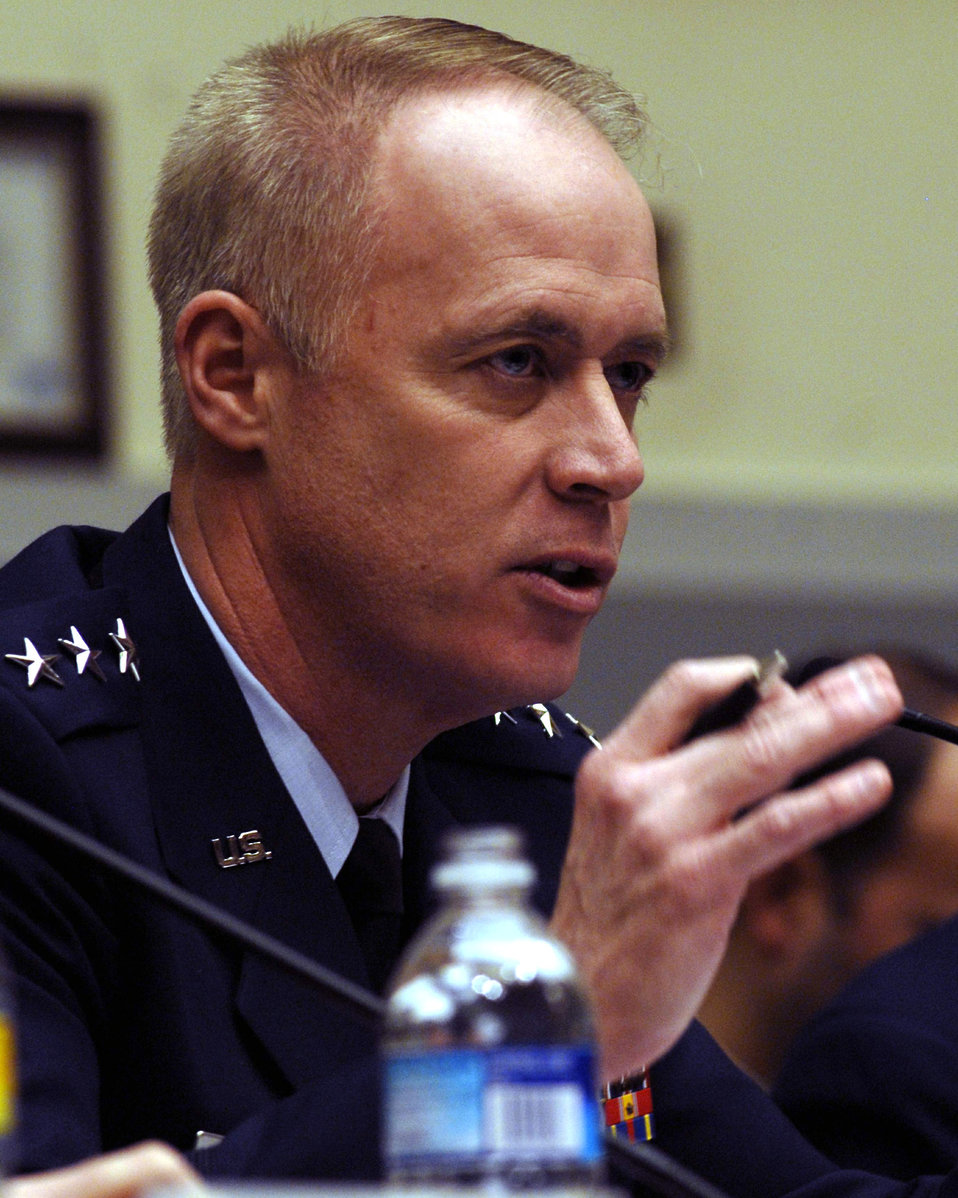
Air Force on target with recruiting, retention

Lt. Gen. Richard Y. Newton III testifies before the House Armed Services Committee Personnel Subcommittee March 2. The general was one of several senior military officials on Capitol Hill to answer questions about recruiting, retention and end strength for the active duty, Reserve and Air National Guard. General Newton is the deputy chief of staff for manpower and personnel.